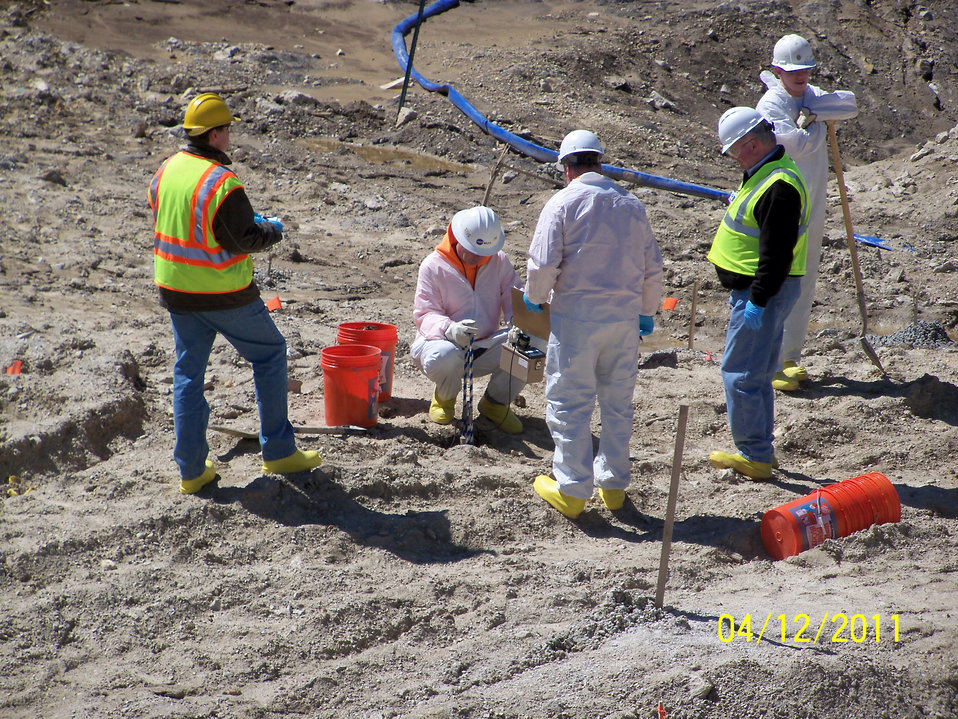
Argonne Forges Ahead in Waste Removal, Facility Demolitions with Recovery Act Help

With the help of $79 million from the Recovery Act, Argonne National Laboratory continues to dramatically reduce its inventory of radioactive materials and waste while making significant progress in its decontamination and demolition (D&D) program.